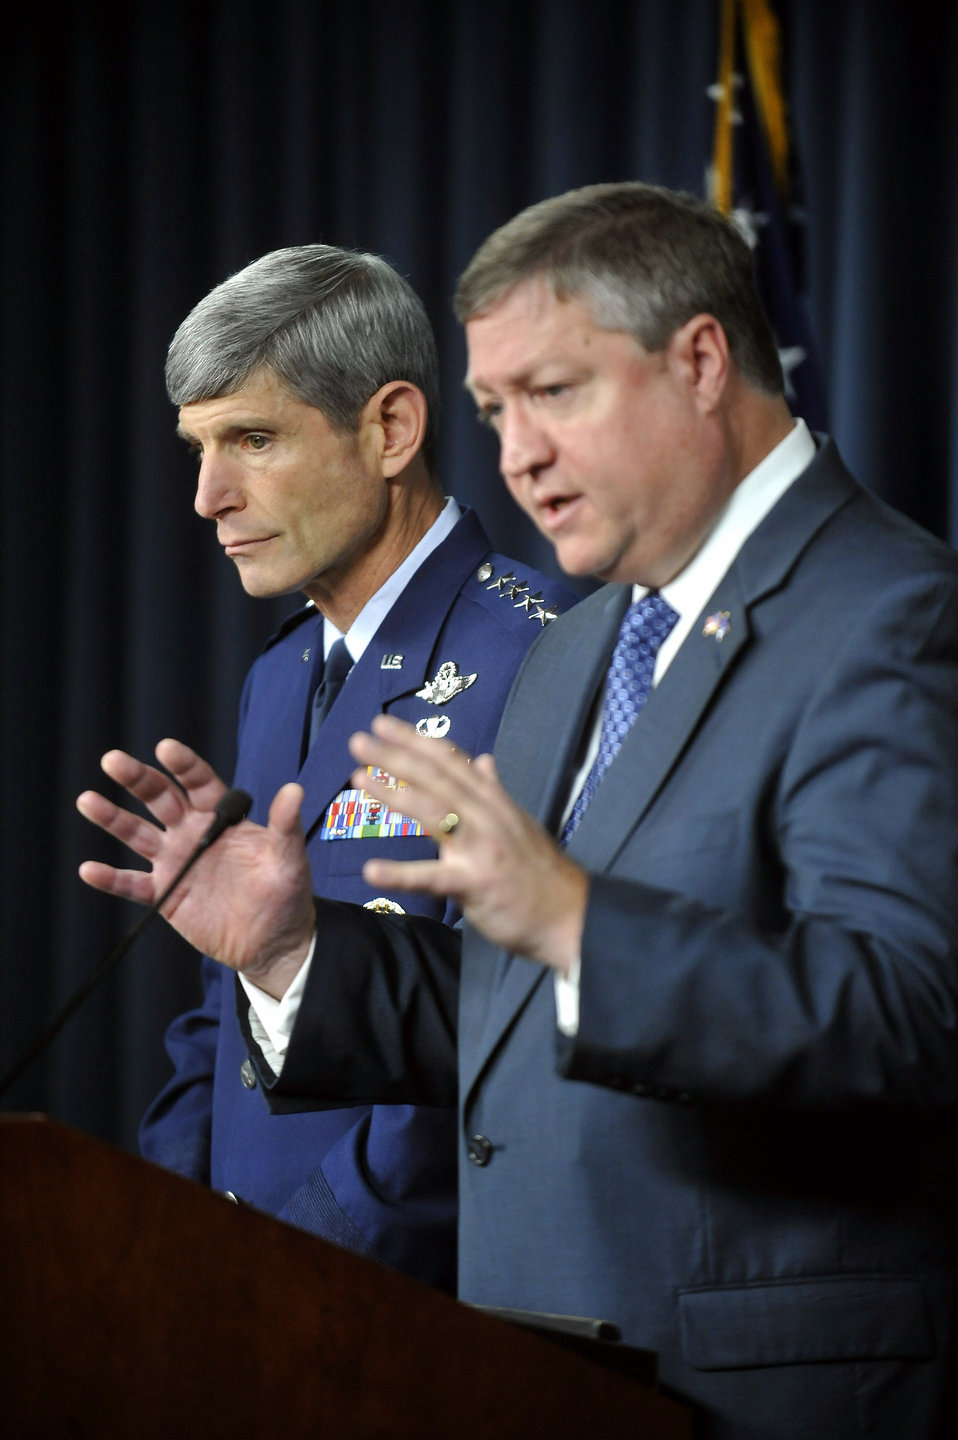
Air Force Accountability

Acting Secretary of the Air Force Michael B. Donley and Air Force Chief of Staff Gen. Norton A. Schwartz speak to members of the press on matters of accountability with regard to nuclear assurance from the Pentagon Sept. 25. The press conference outlined actions taken by the Air Force in response to the Donald Report.